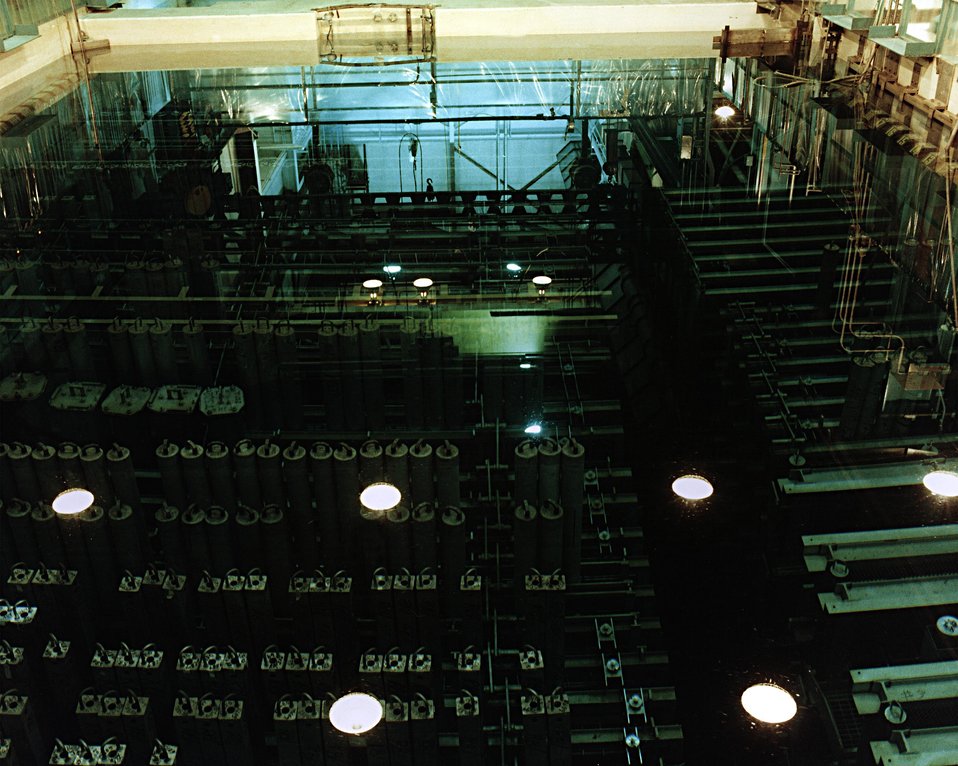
SPENT FUEL RODS AT RECEIVING BASINS FOR OFFSITE FUELS AT SRS.